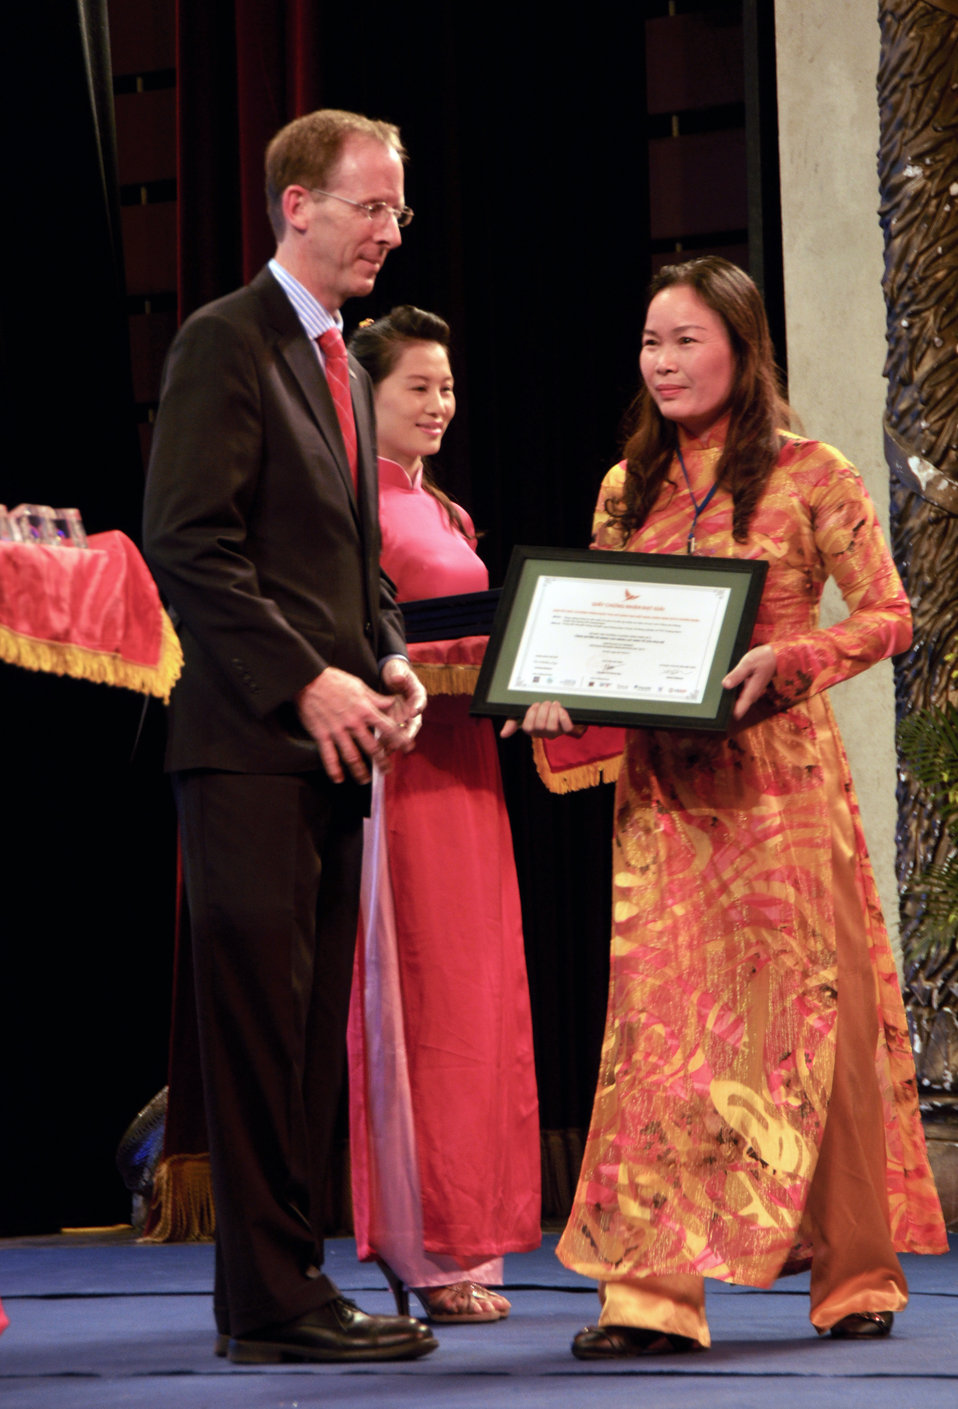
Vietnam Women Innovation Day 2013

USAID Mission Director Joakim Parker awards prizes to winning innovative proposals.

Hanoi, October 2, 2013.